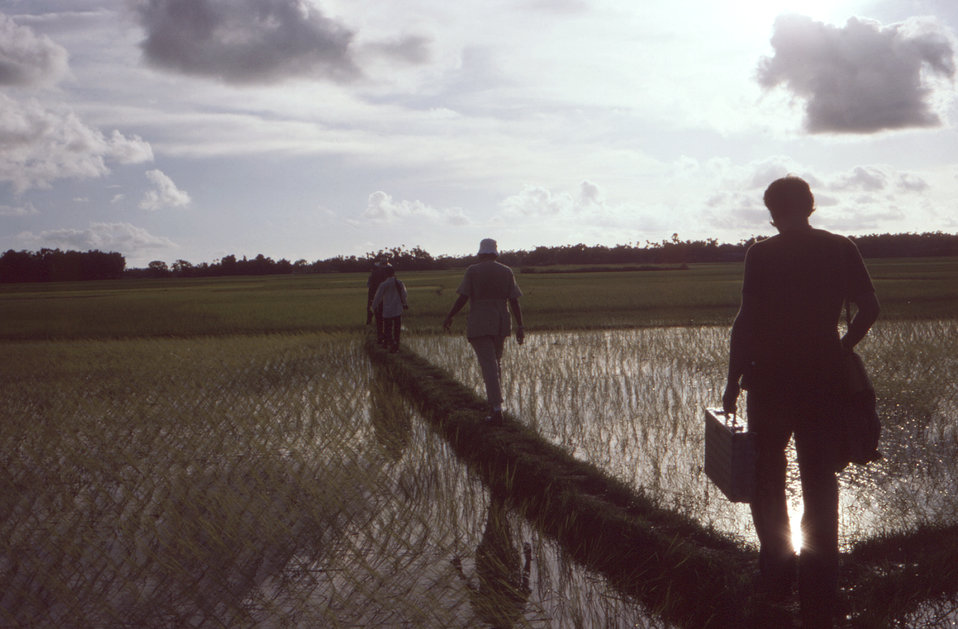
Depicted in this image, were members of the smallpox eradication team on a 3-day field training program, as they were in the process of conducting a search for smallpox in the Sylet District of north-eastern Bangladesh. At this point in their journey, the team was crossing rice paddies, by using man-made earthen bridges.